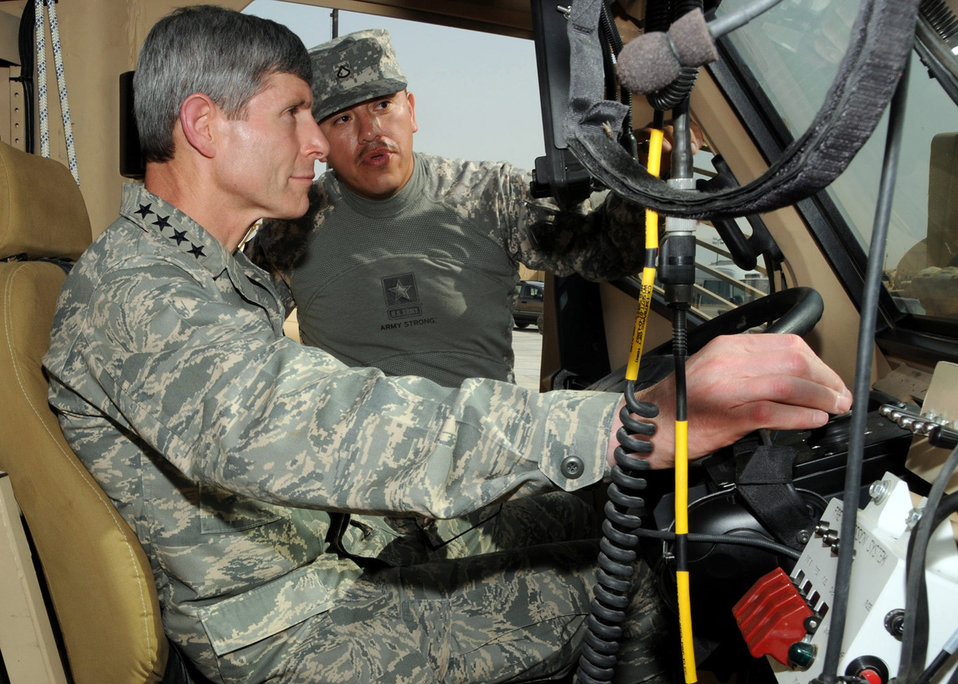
CSAF addresses 386th Airman during AOR visit

Air Force Chief of Staff Gen. Norton Schwartz receives a briefing at an Army base in Southwest Asia April 7 from an Army Soldier about the capabilities and benefits of the Mine Resistant Ambush Protected vehicle. During his visit, General Schwartz met with Airmen and Soldiers performing duties as line haul truckers in Iraq.